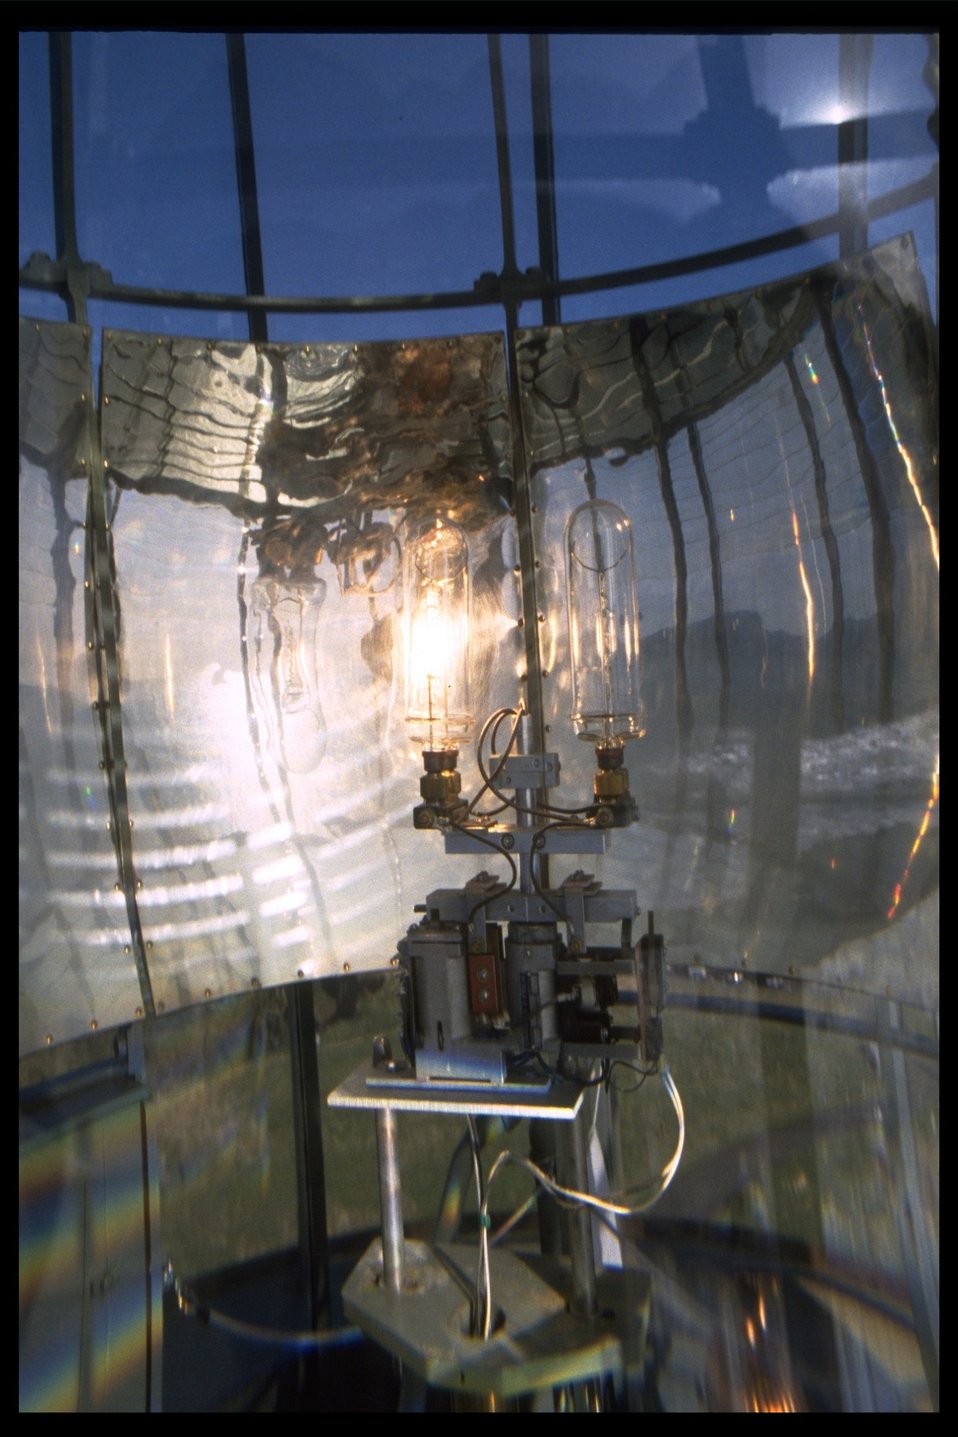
The lightbulb (1000 watt lens) on the interior of the Yaquina Head lighthouse.